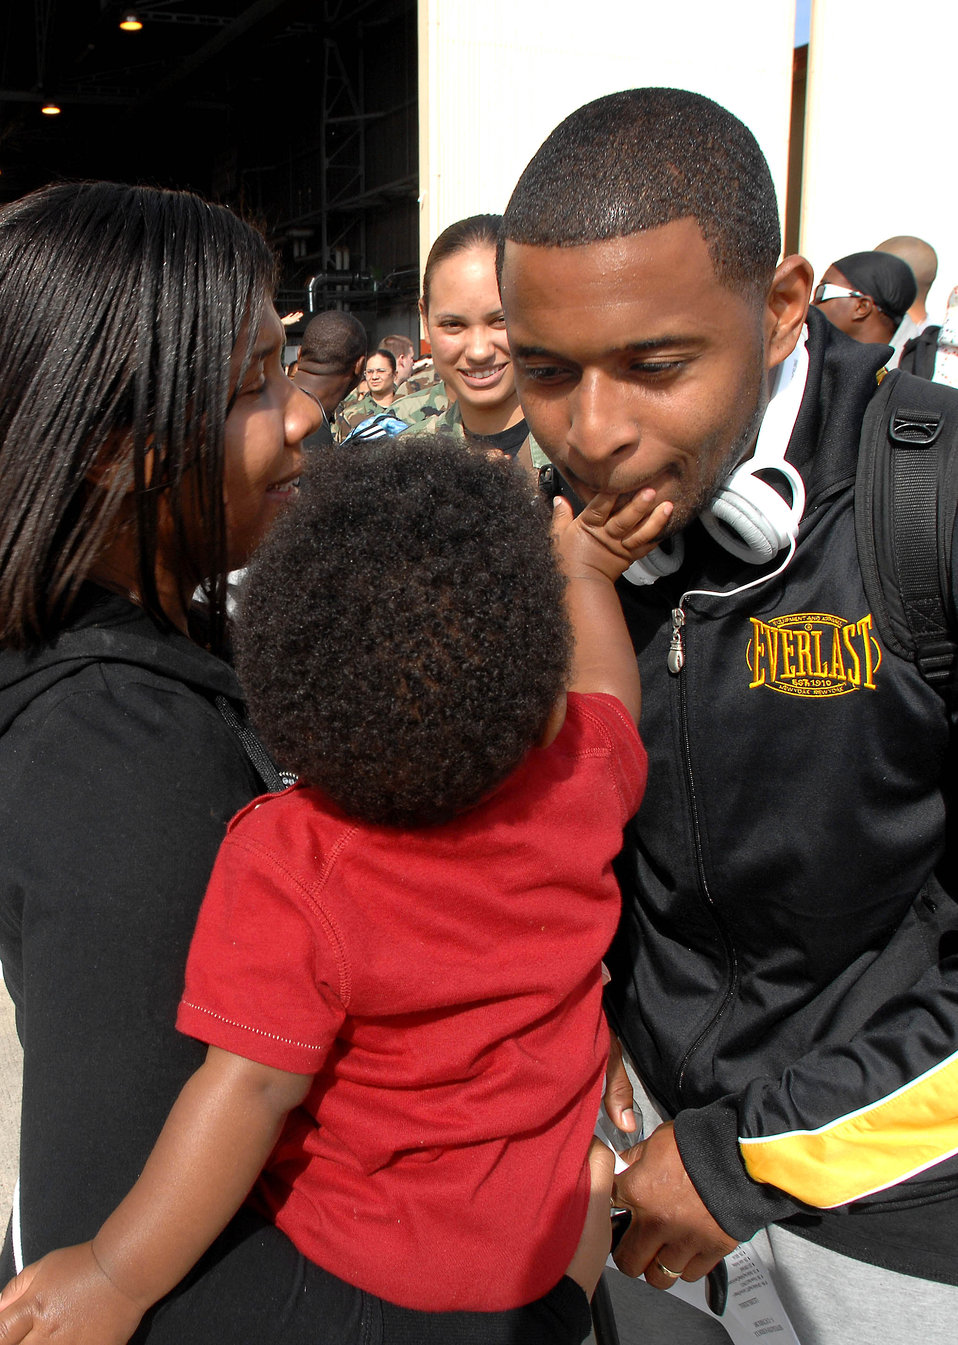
Returning warriors welcomed home

Staff Sgt. Tirrell Gordon reunites with his wife and son Oct. 9 during